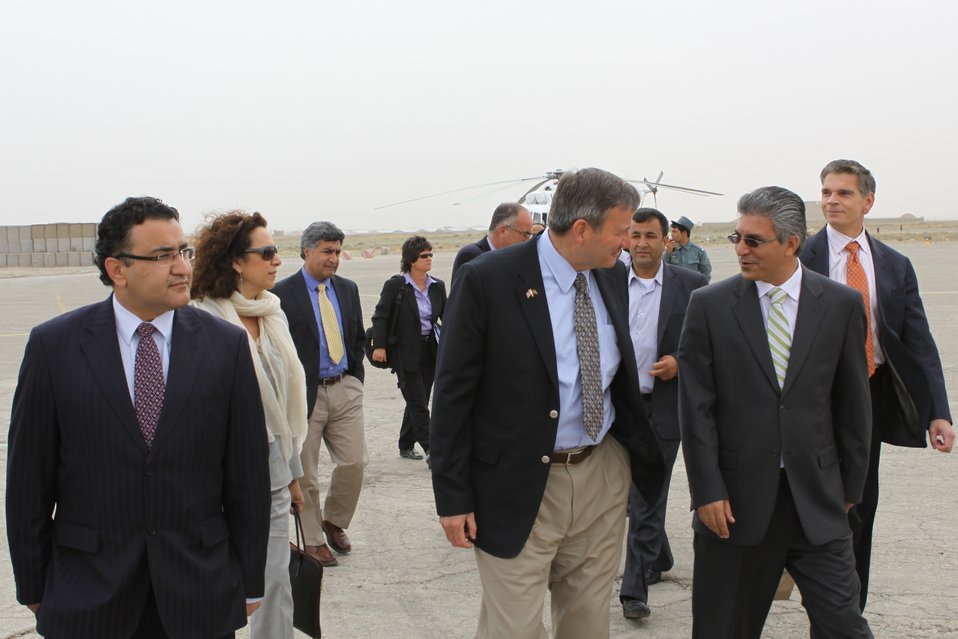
100525 Hirat Marble Conference 038